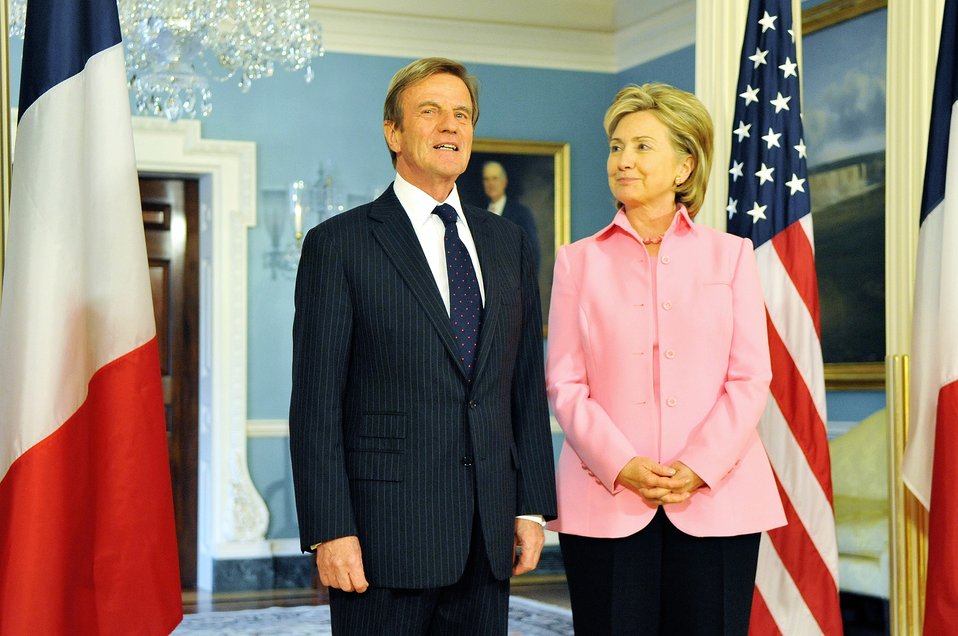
Secretary Clinton Meets With French Foreign Minister

U.S. Secretary of State Hillary Rodham Clinton hosts a bilateral meeting with French Foreign Minister Bernard Kouchner in the Treaty Room of the U.S. Department of State in Washington, DC May 11, 2009.